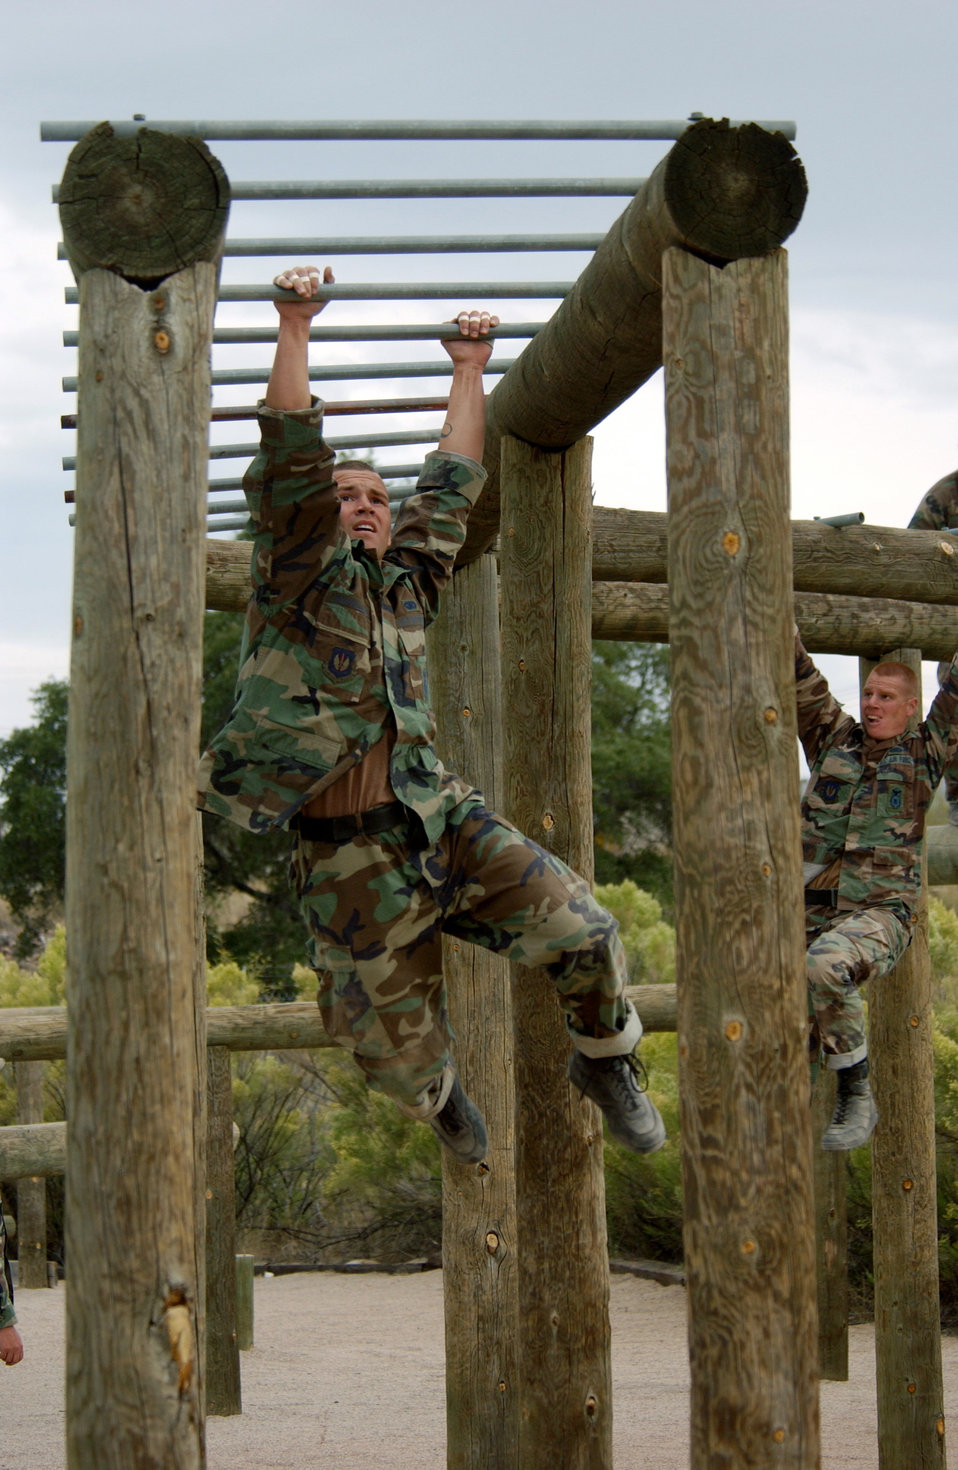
'Tarzan' coming through

FORT HUACHUCA, Ariz. -- Senior Airman Dustin McPhillips swings hand to hand on the training obstacle named